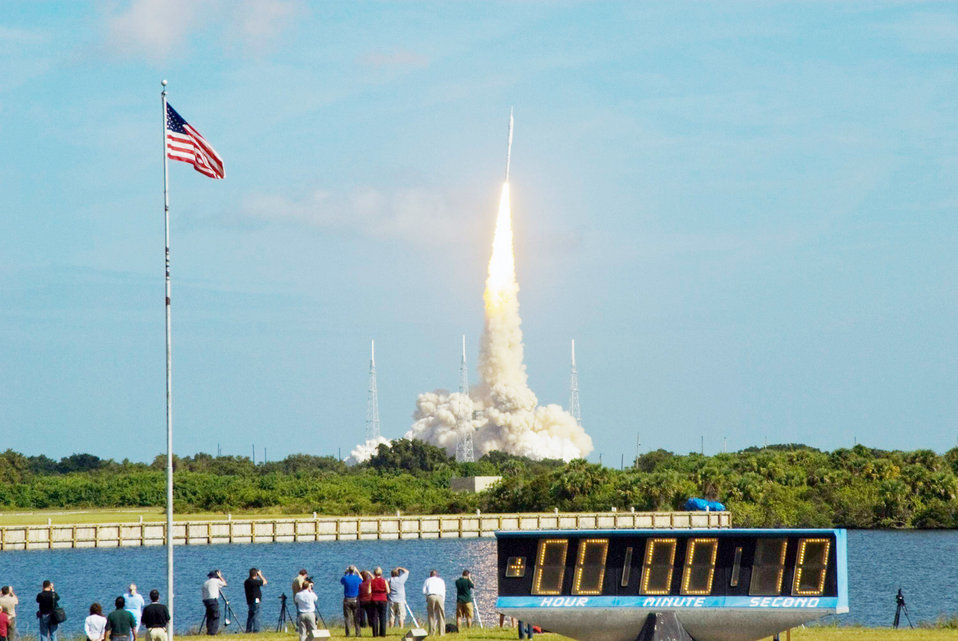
Off to the stars and beyond!

The stars and stripes on the American flag wave as the Ares I-X test rocket roars off Launch Complex 39B Oct. 28, 2009, at NASA's Kennedy Space Center, Fla.